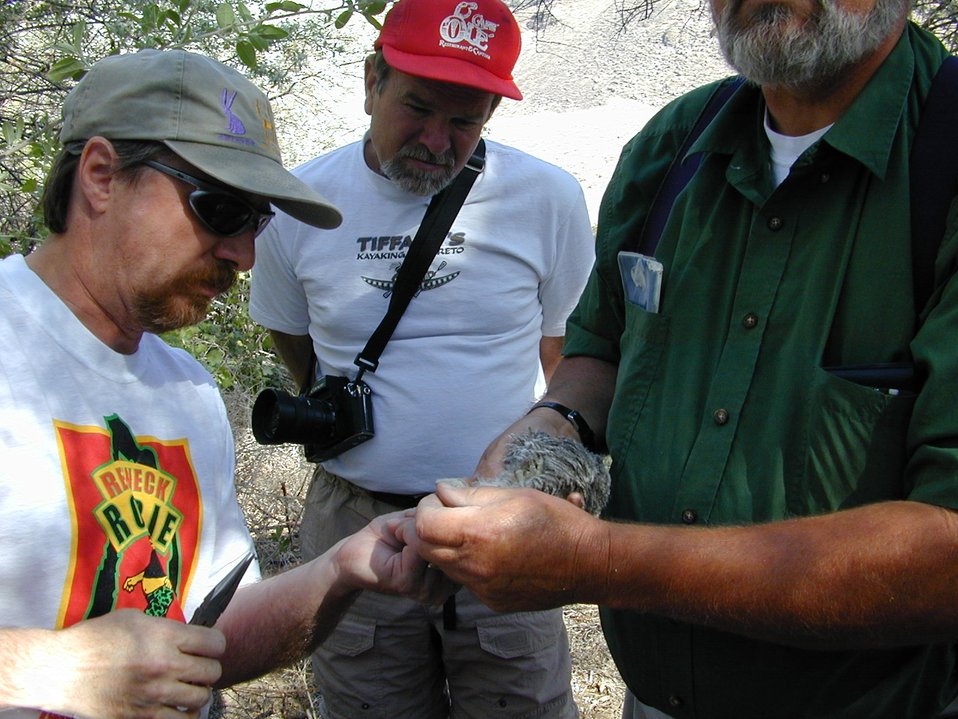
Environmental Education Fire Workshop Timberline High School Fall 2000